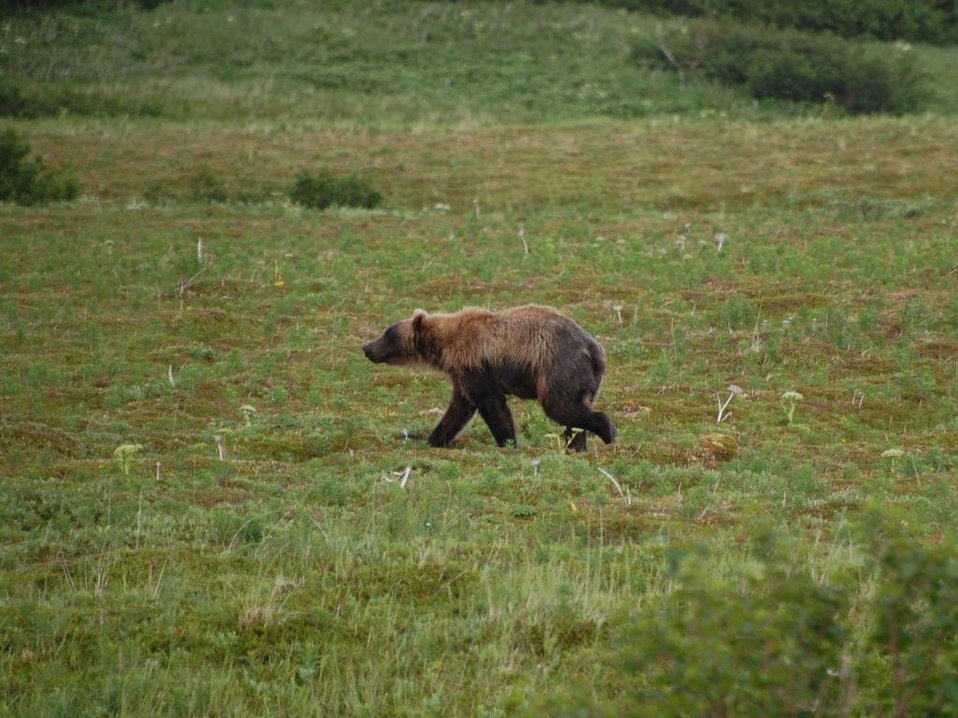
Brown Bear

Izembek National Wildlife Refuge